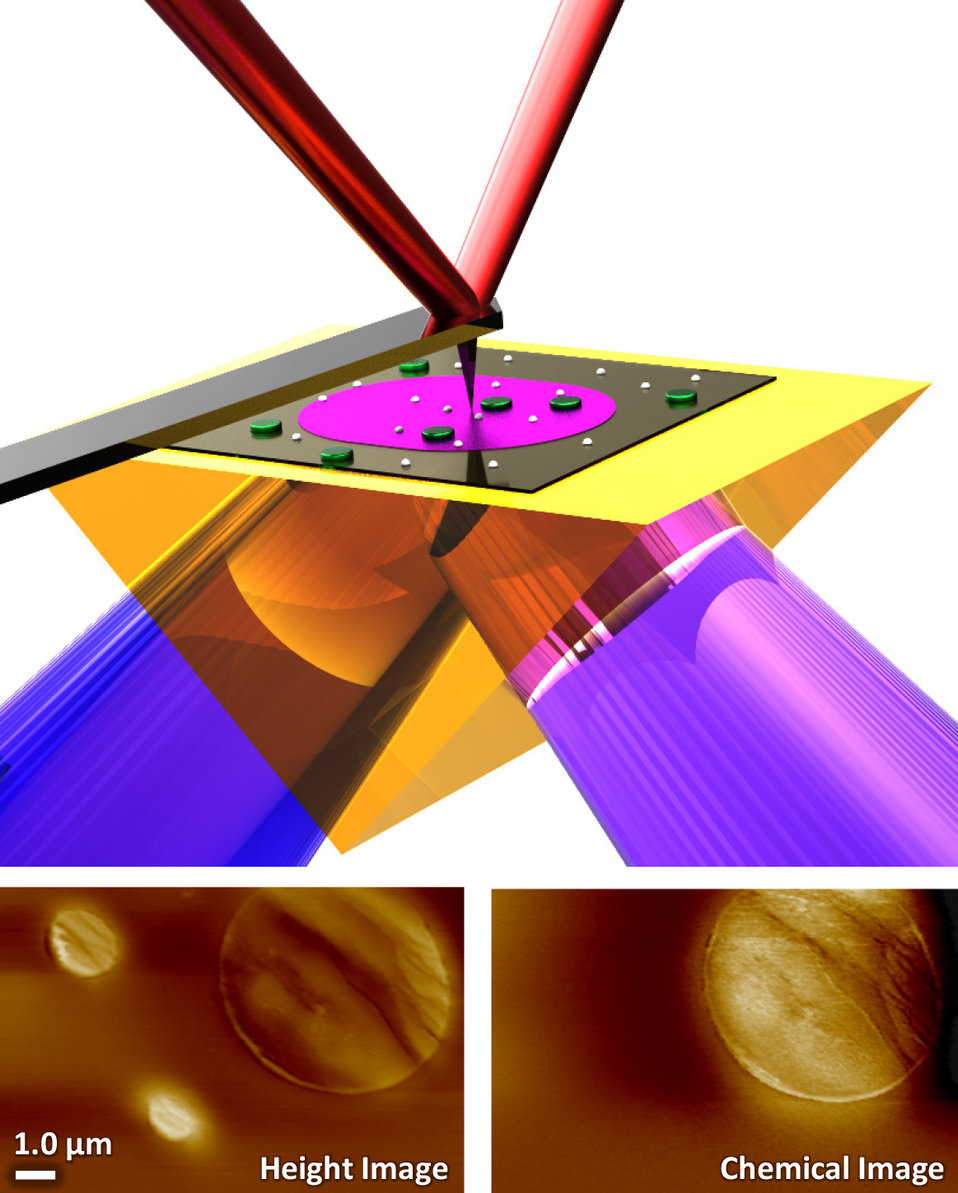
Photothermal Induced Resonance (PTIR)

The sample (green/white) absorbs infrared laser light (purple) at wavelengths determined by its chemical composition, causing it to expand, which deflects the AFM cantilever. Bottom left: The AFM detects the height of two small polystyrene particles and a large polymethylmethacrylate (PMMA) particle. Bottom right: The light is tuned to be absorbed only by PMMA but not by polystyrene. Combining the data and recording chemical images at different wavelengths produces a map of the surface's topography and chemistry.